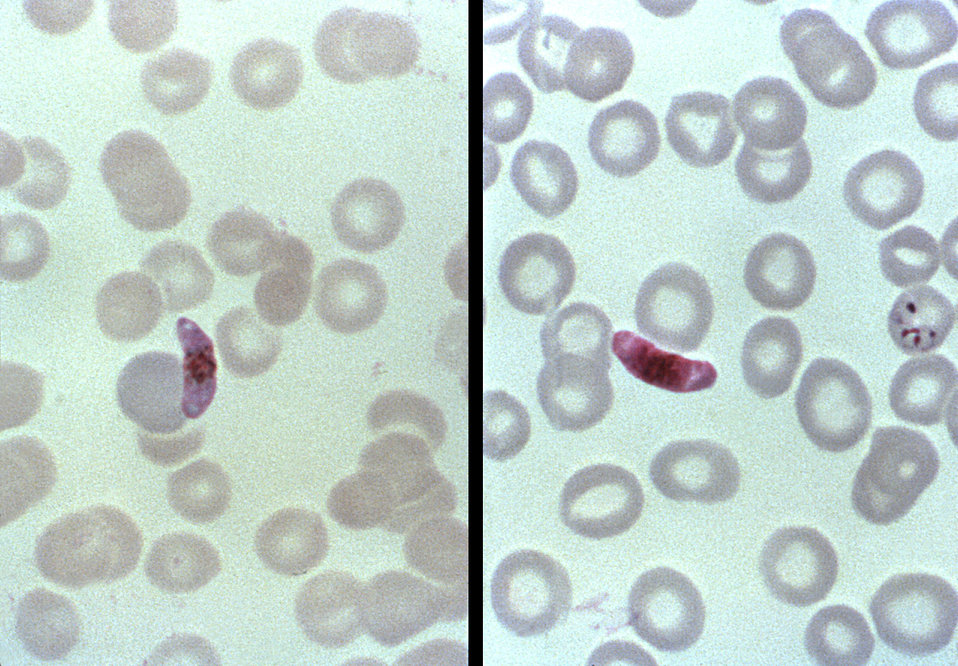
These thin film Giemsa stained micrographs reveal a Plasmodium falciparum micro- and macrogametocyte.